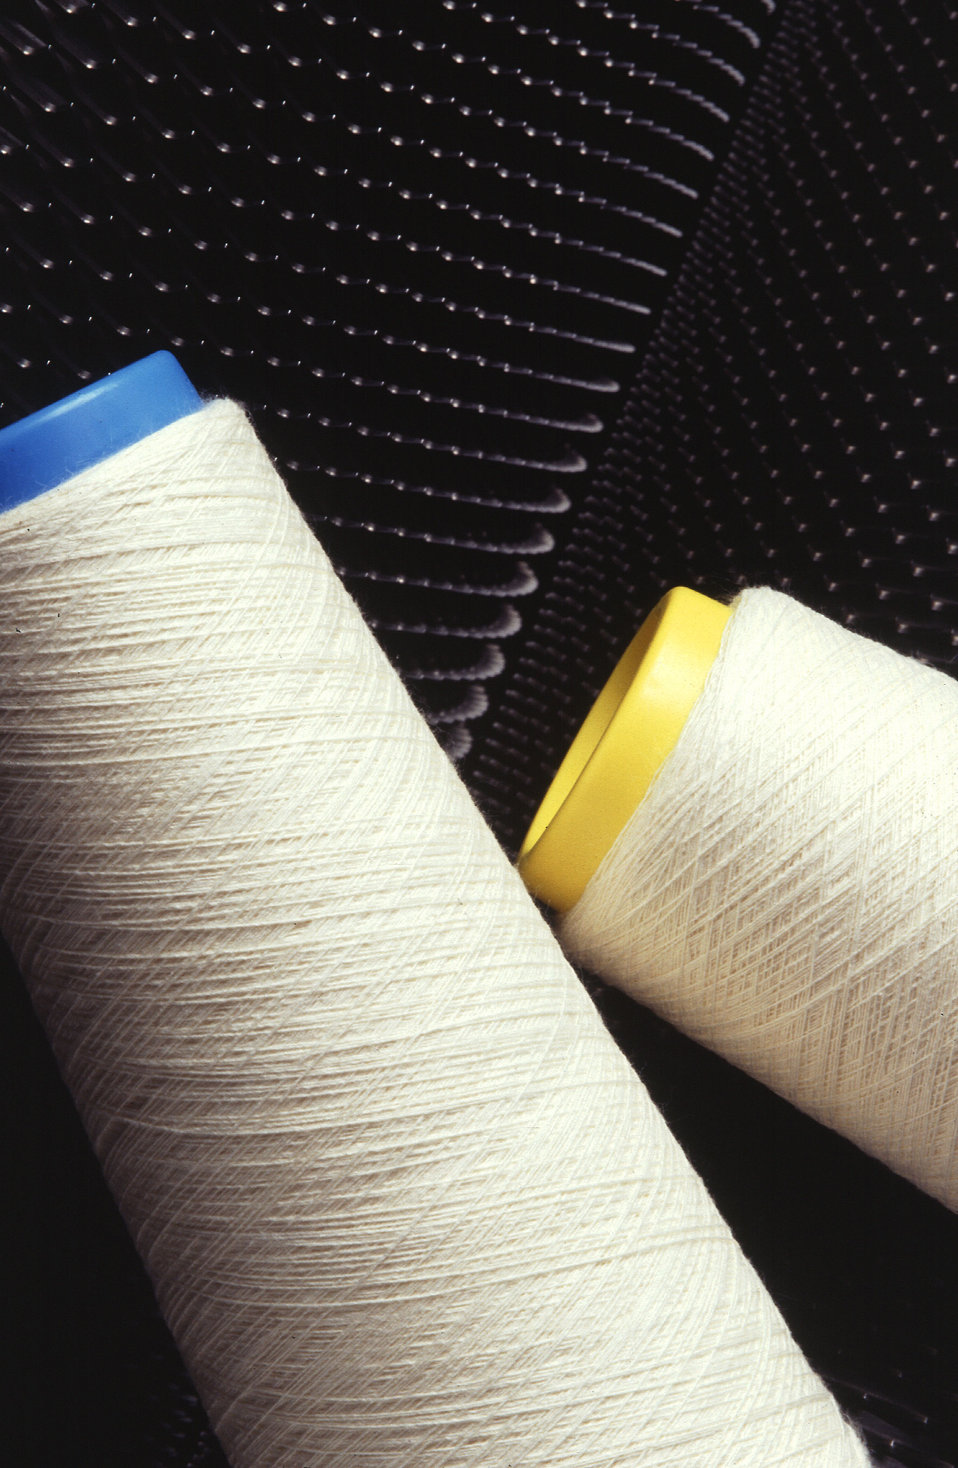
From seed planting to yarn making, cotton textile production in the U.S. benefits from many laborsaving devices. One such invention developed by the U.S. Department of Agriculture (USDA) Agricultural Research Service (ARS) speeds accurate assessment of fiber quality in raw cotton.